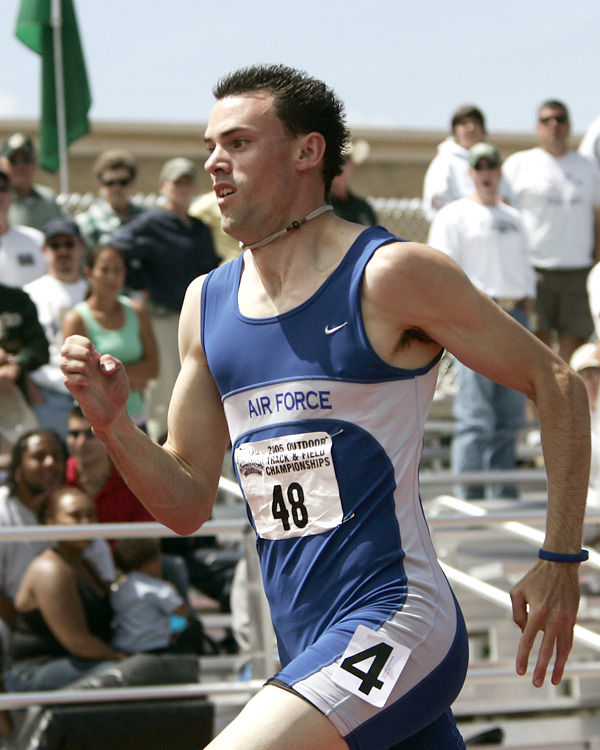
Falcons sweep conference weekly awards

Cadet 3rd Class Travis Picou is the Mountain West Conference Men's Outdoor Track and Field Athlete of the Week. He set two Air Force Academy records en route to event victories in the 100- and 200-meter dashes at the Colorado Invitational. His time in the 100-meter dash broke an 18-year-old Academy record.